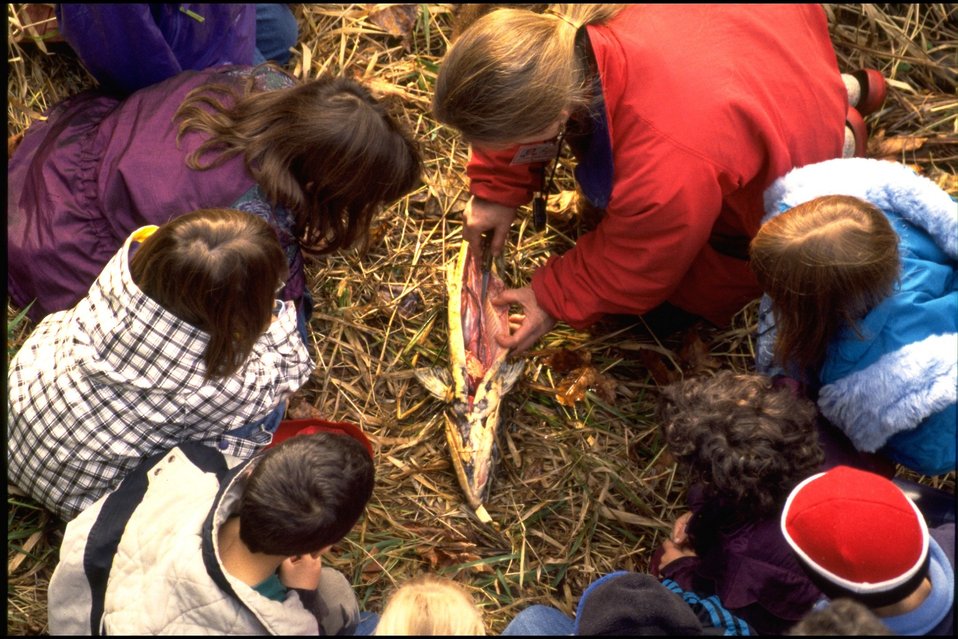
Salmon Watch Program (Fish Creek) - Crow/Applegate Schools.